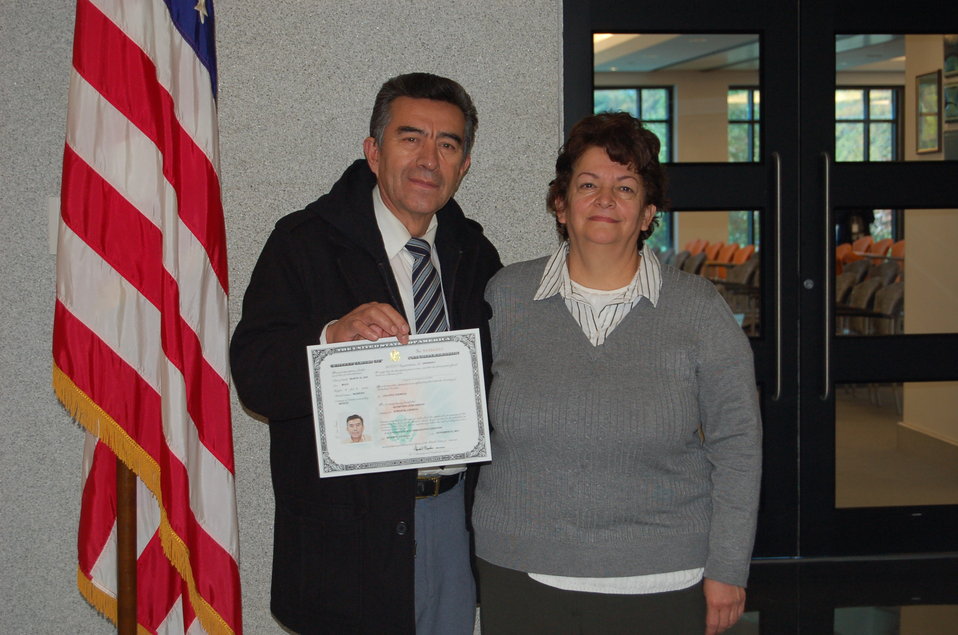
New Citizens